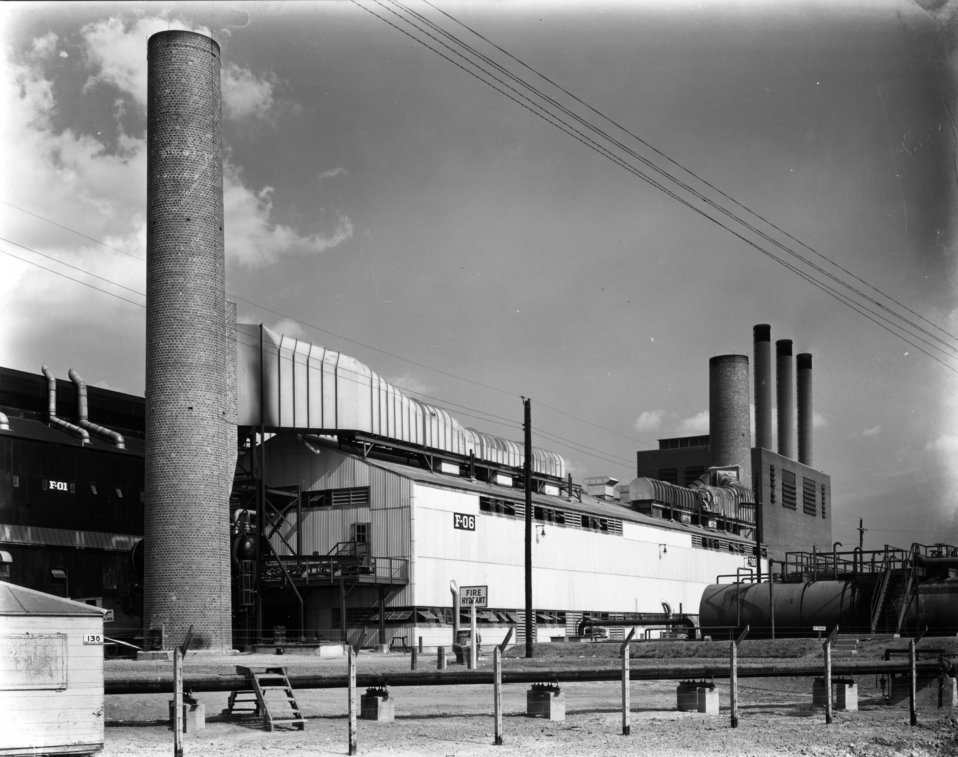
Schools at Oak Ridge